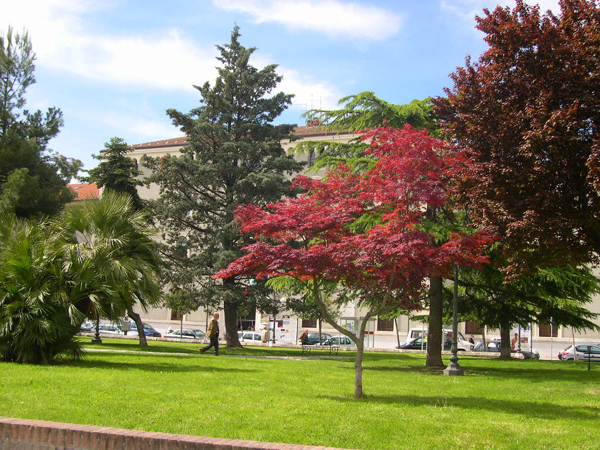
Campobasso centro